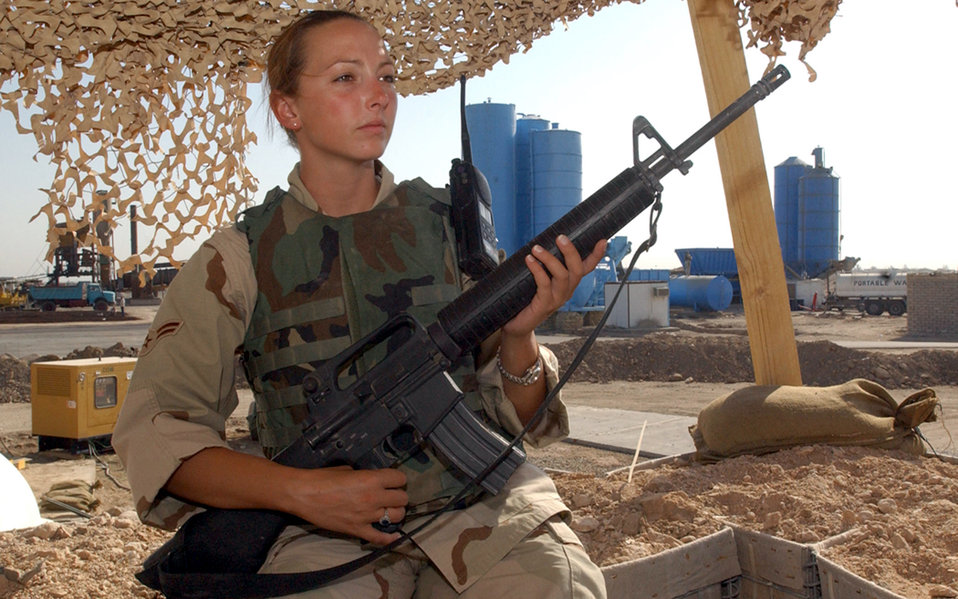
Escorts

TALLIL AIR BASE, Iraq -- Airman 1st Class Caroline George watches local-national workers at the cement plant here. She is one of about 50 Airmen deployed here to serve as an escort for the 407th Expeditionary Civil Engineer Squadron's force protection flight.